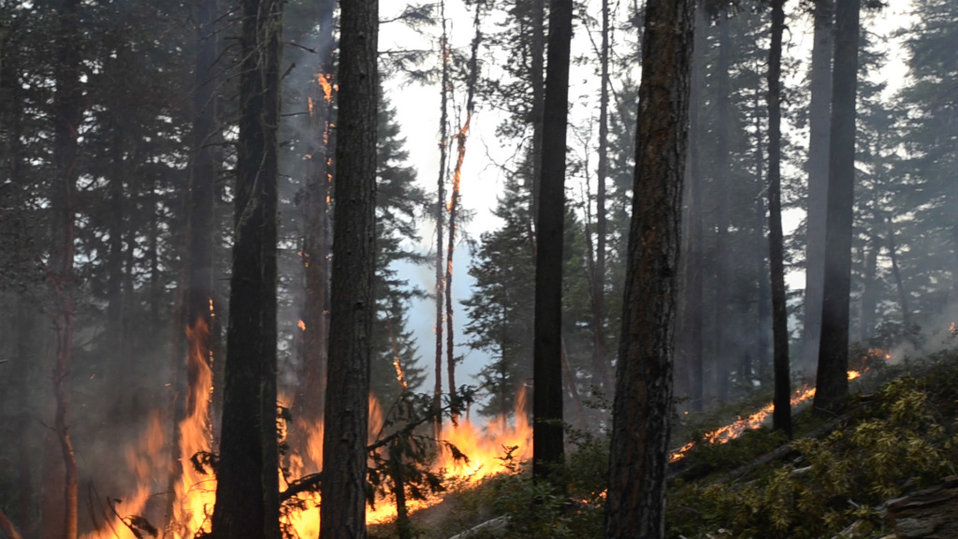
Geronimo Interagency Hotshot Crew, Department of the Interior (DOI) Indian Affairs (IA) Bureau of Indian Affairs (BIA) San Carlos Agency in Arizona; on assignment at the Big Windy Complex Wildlands Fire, approximately 15 miles west of Interstate-5 and East Northeast of Galice, Oregon, conducts a prescribed burn 'burnout' operation to help stop the main fire that may head toward this roadway, on Friday, Aug 9, 2013. The primary mission of the Interagency Hotshot Crews (IHC) is to provide a safe, organized, mobile and highly skilled hand crew for all phases of wildland fire suppression. The arduous duties and specialized assignments required of IHC personnel require uniform staffing, certification, training, equipment, communications, transportation, organization, and qualifications that adhere to interagency standards and guidelines.